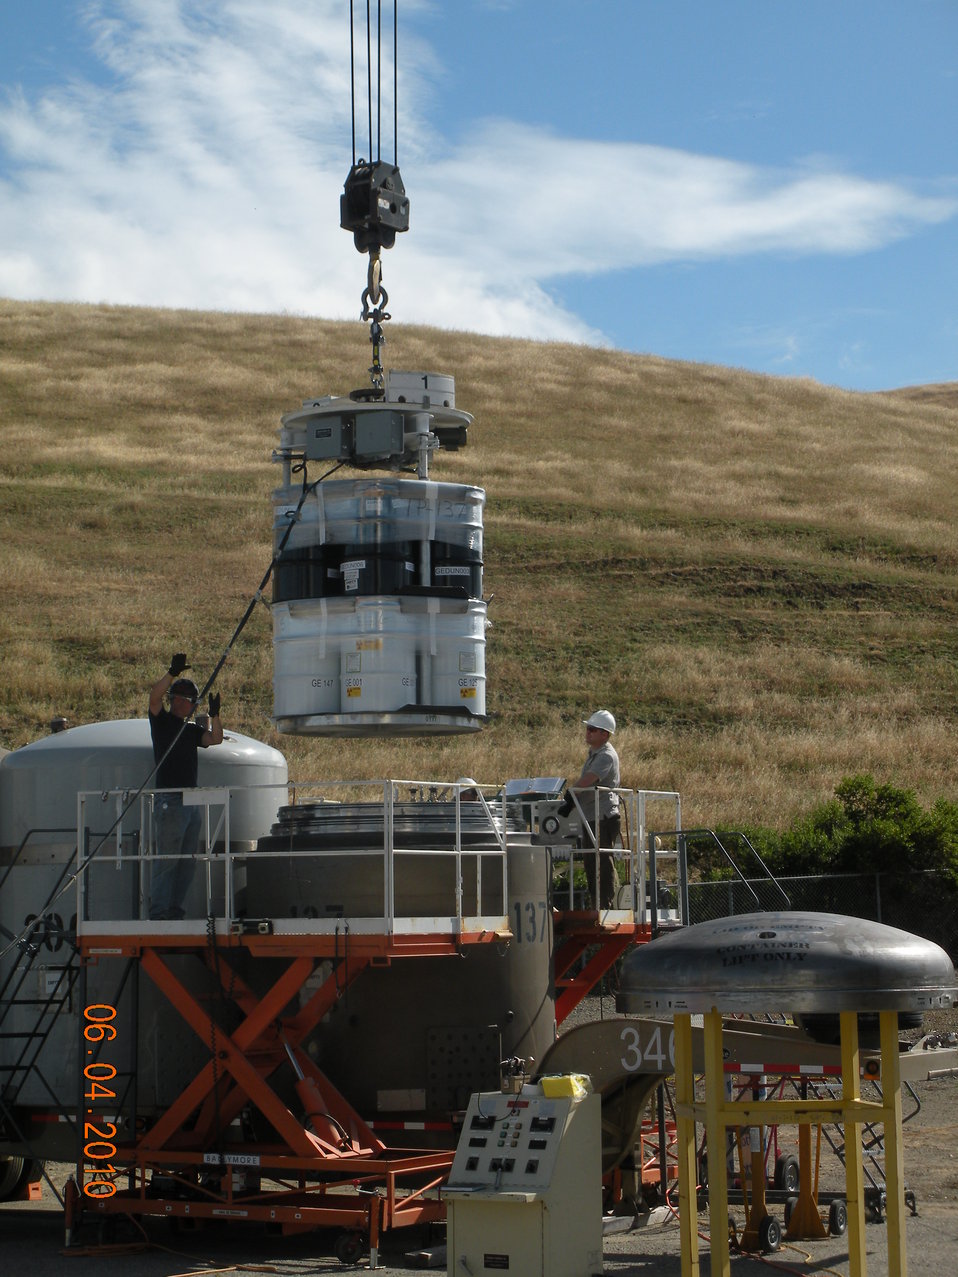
Recovery Act Leads to Cleanup of Transuranic Waste Sites

Employees load transuranic waste into a shipping container at Vallecitos Nuclear Center.